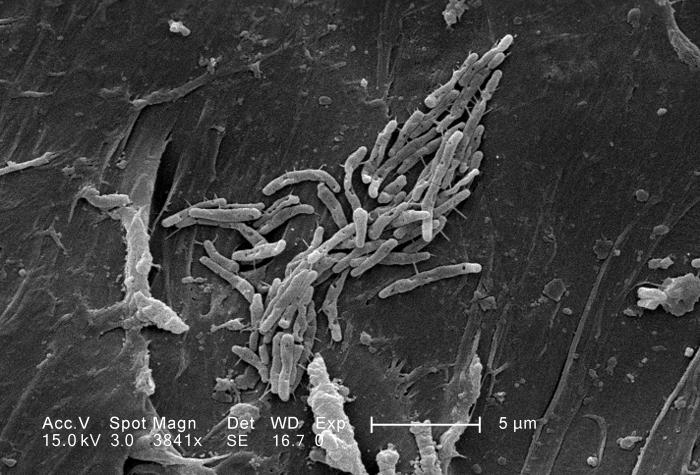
Under a magnification of 3841X, this scanning electron micrograph SEM) revealed some of the ultrastructural morphologic details exhibited by a number of Gram-positive bacilli, or 'rod-shaped', Mycobacterium fortuitum bacteria. See PHIL 11033 for a colorized version of this image.